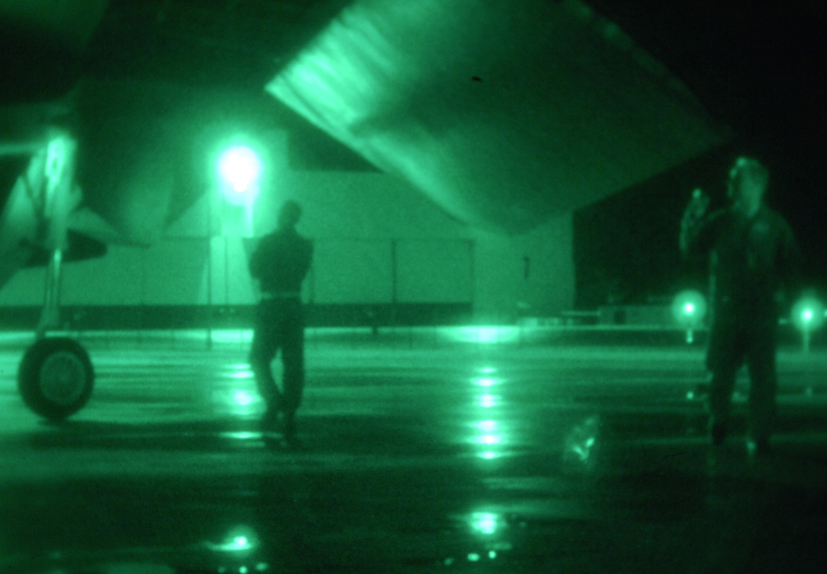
Getting ready

Aircrew members from the 23rd Bomb Squadron at Minot Air Force Base, N.D., perform a flight check on a B-52 Stratofortress before a Nuclear Weapon System Evaluation Program mission.